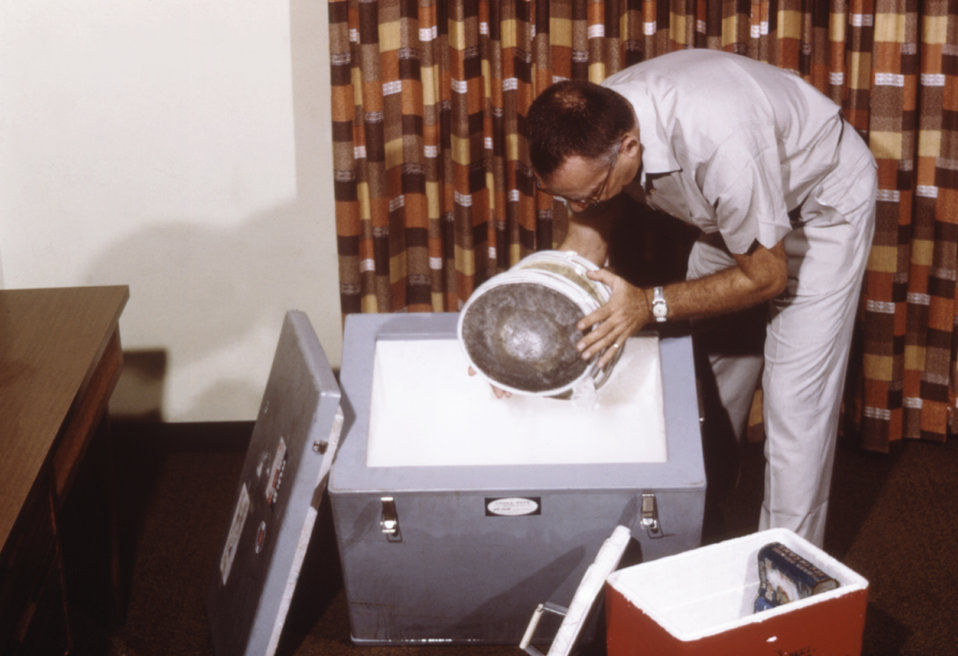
A CDC field researcher is shown transporting the mosquito collection bag to a dry ice cooler in order to freeze the insects.